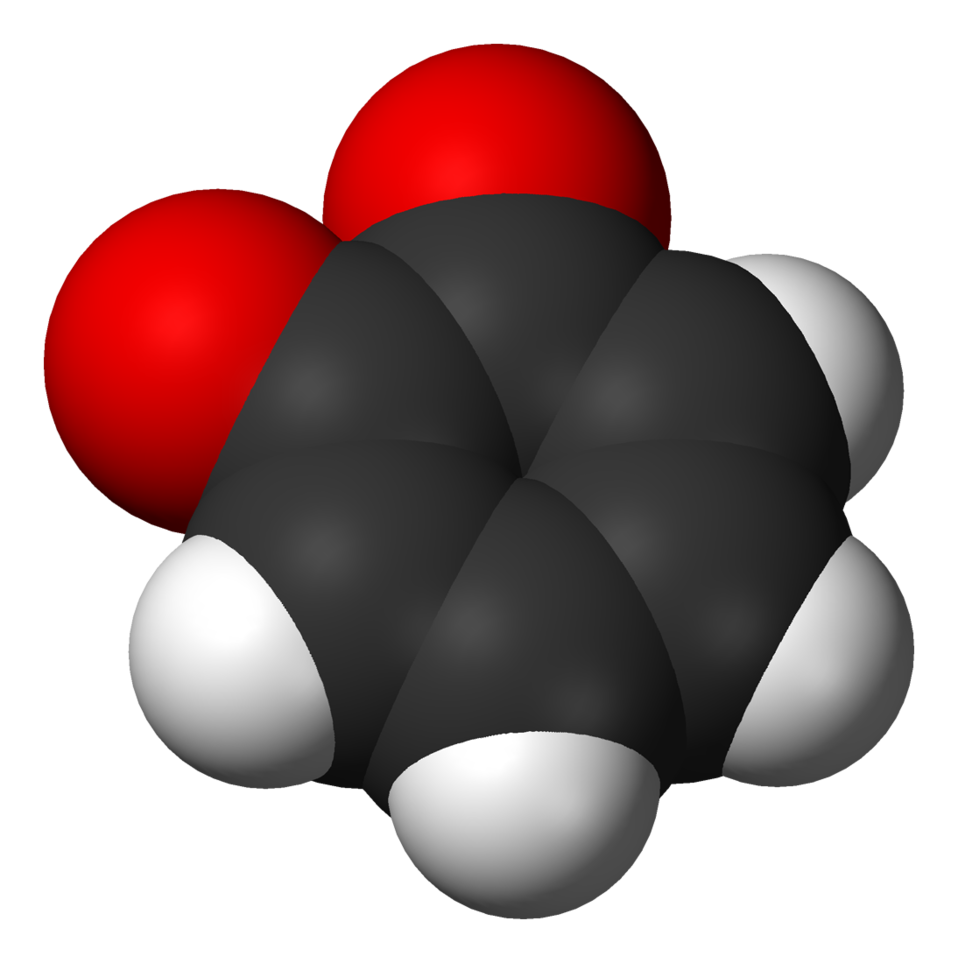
1,2-benzoquinone-3D-vdW